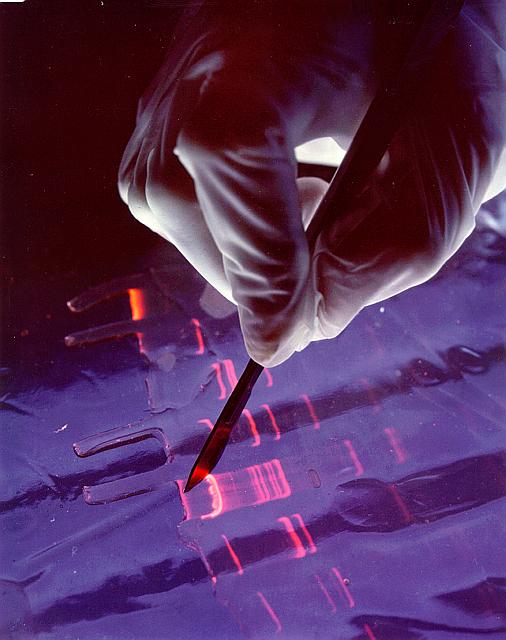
Gel electrophoresis was developed for looking at gene sequences. Pacific Northwest National Laboratory conducts a wide variety of life science research using gel electrophoresis. Electrophoresis gel separations are used in searching for gene constructs with commercial potential.